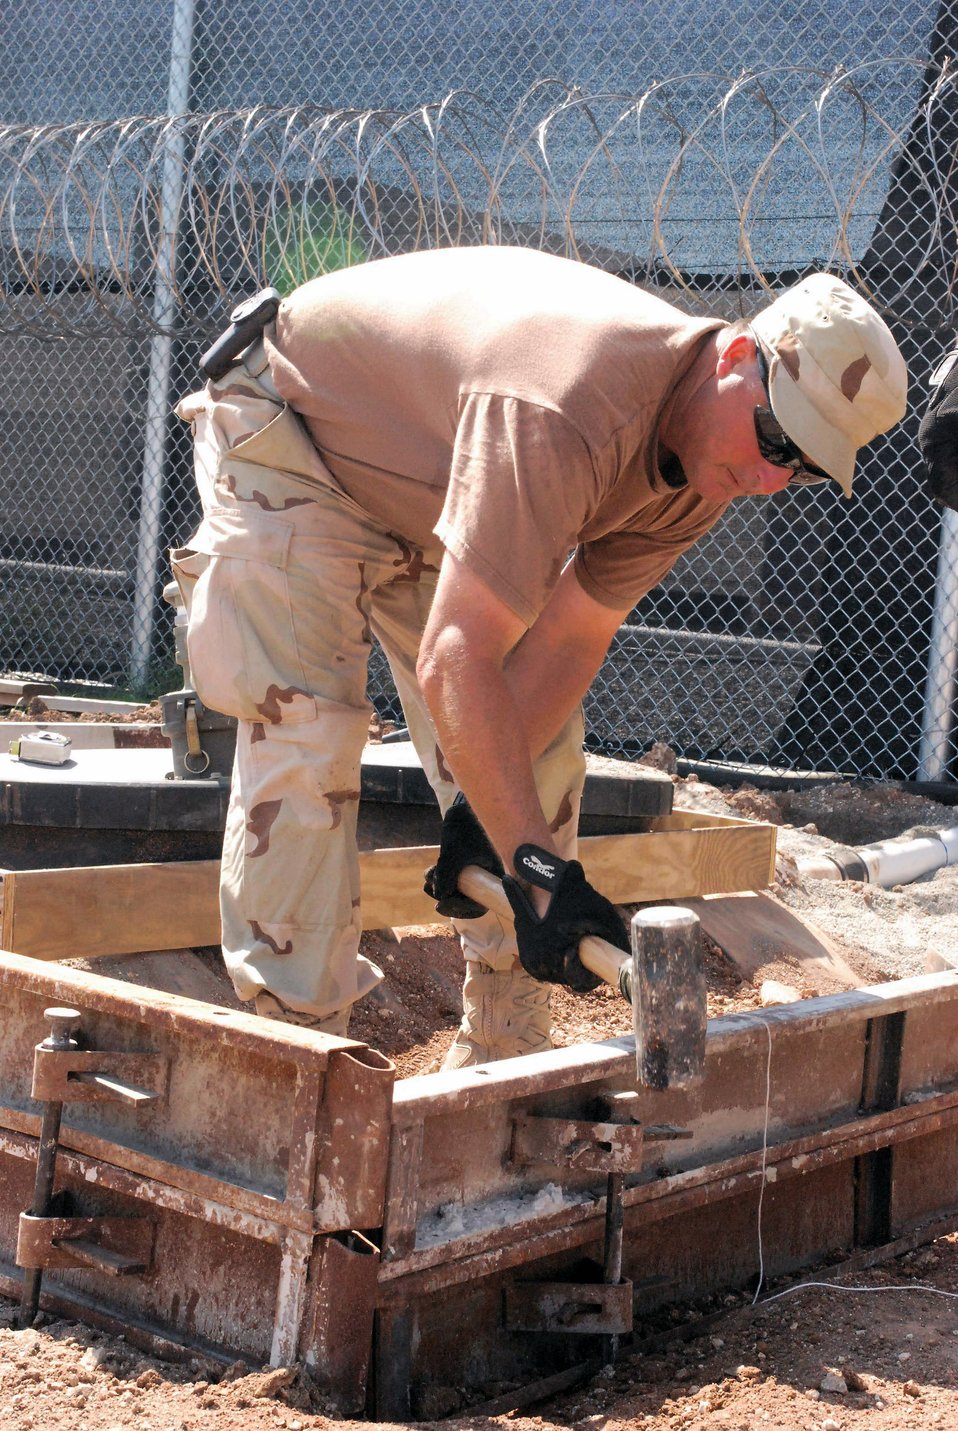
Airmen build legal complex at Camp Justice

Staff Sgt. Mike Hartman hammers forms in place for a concrete foundation March 13 at Camp Justice on Guantanamo Bay, Cuba. Sergeant Hartman is a member of the 474th Expeditionary Civil Engineering Squadron, which broke ground on the complex Sept. 11, 2007, to construct the Expeditionary Legal Complex. Joint Task Force Guantanamo personnel conduct safe and humane care and custody of detained enemy combatants.